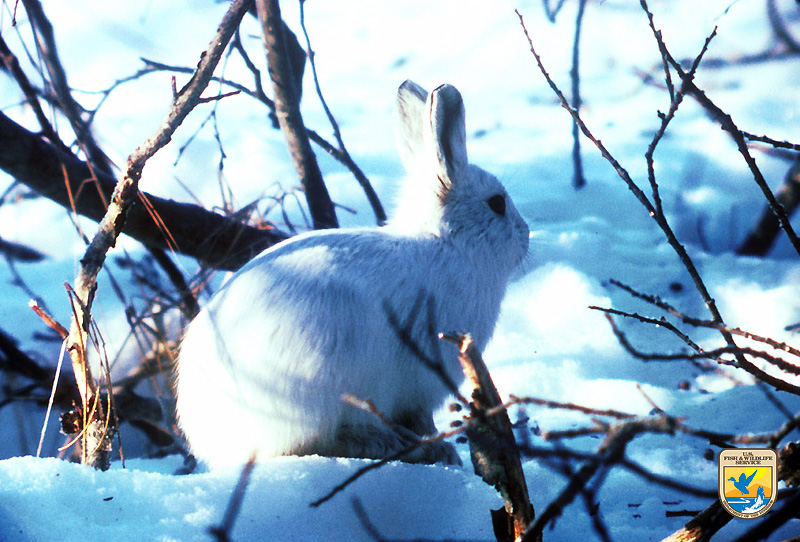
Arctic Hare

An arctic hare in the snow.